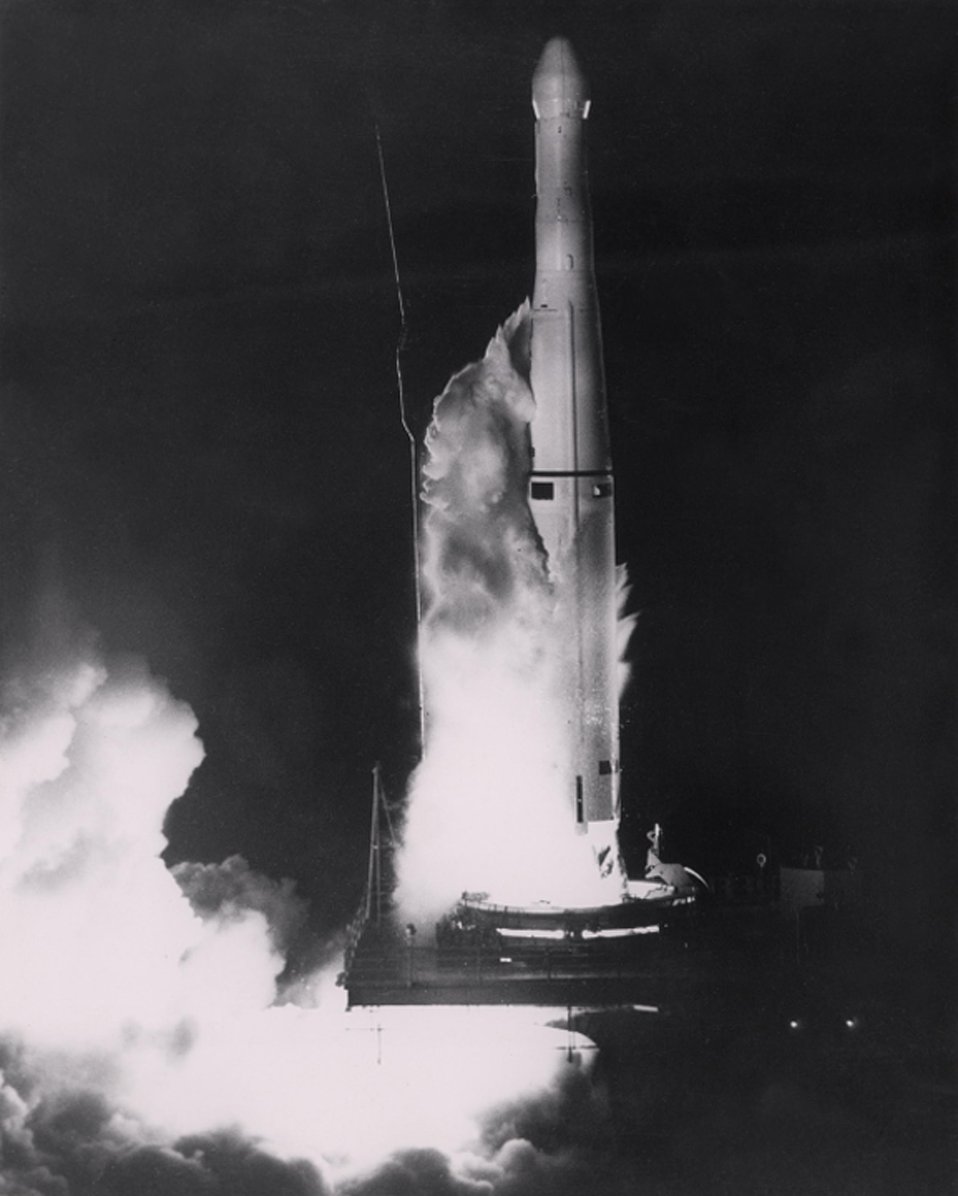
The Navy's TRANSIT IV-A satellite is shown leaving Cape Canaveral atop a Thor-Able-Star rocket on June 29, 1961 in the first launching of an atomic power source into orbit.